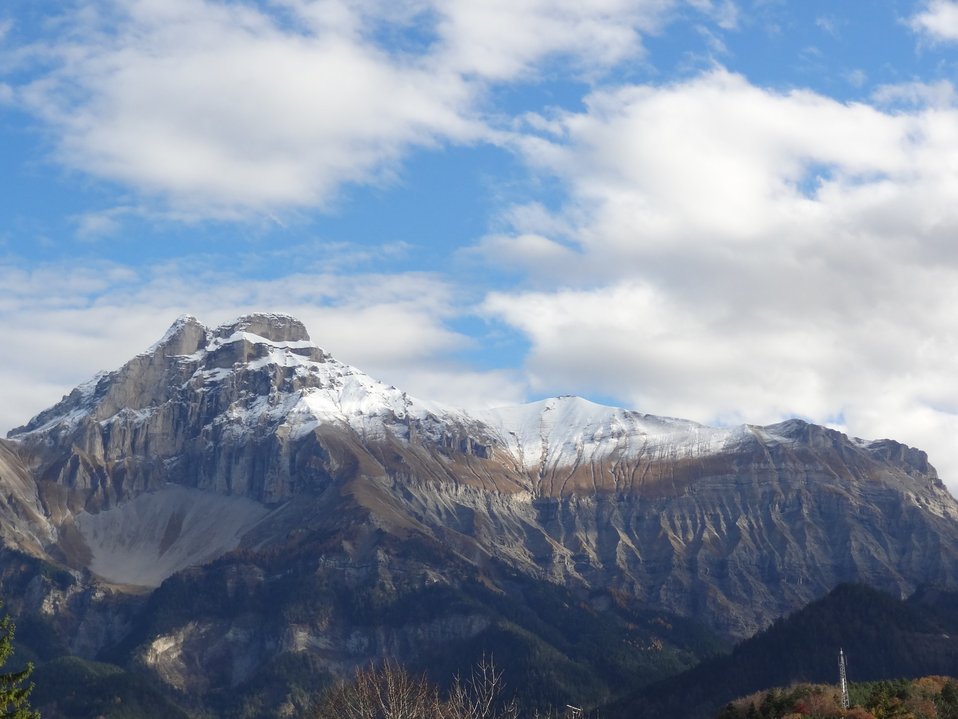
Mountains in the clouds

Mountain tops.